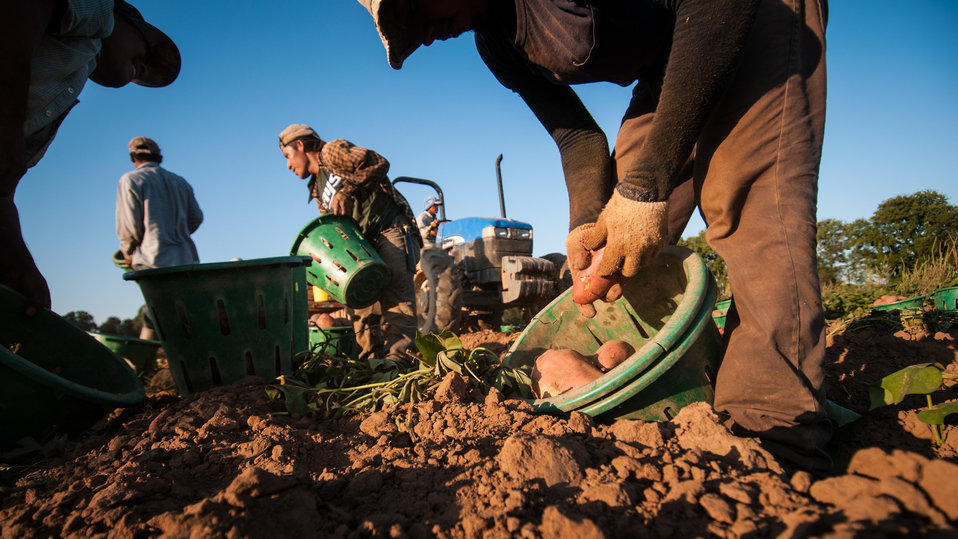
Migrant workers carefully lift large sweet potatoes as they pick and sort according the potatoes to size at Kirby Farms in Mechanicsville, VA on Sep. 20, 2013. Fresh from the ground the red skin is easily marred (light spot) and hand picking helps keep them looking good. Kirby Farms is a third-generation family farm that covers 500 acres, and generates produce and grains on a year-around operation. Please see the photoset description for more information about this harvest.